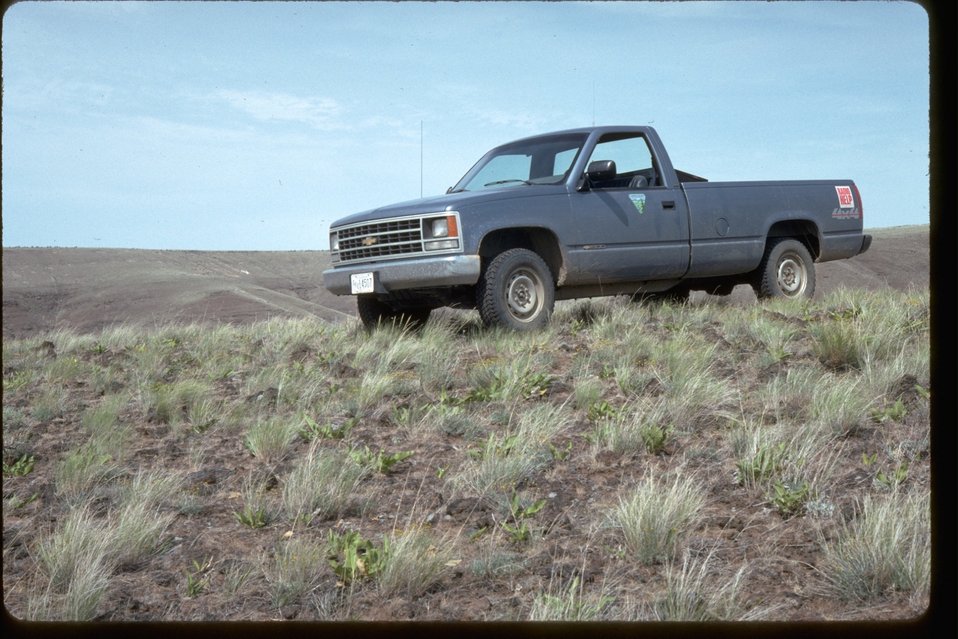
BLM truck in rangeland area.